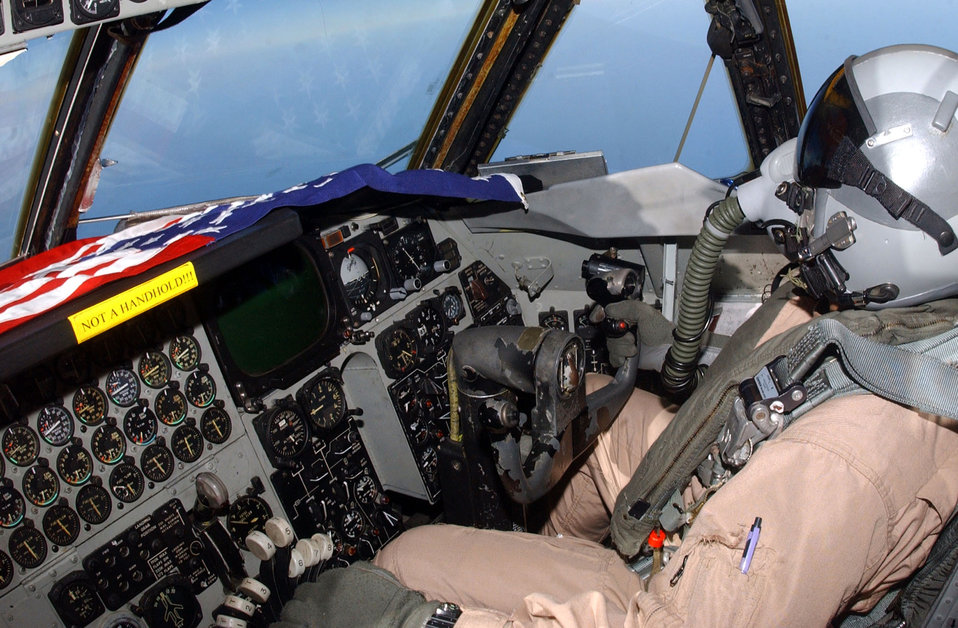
Flying colors

OPERATION IRAQI FREEDOM -- With the nation's flag proudly on display 40th Expeditionary Bomb Squadron B-52 Stratofortress co-pilot flies a close air support mission over Iraq, April 17, 2003. B-52 CAS mission is in support of coalition forces stabilizing the country of Iraq.